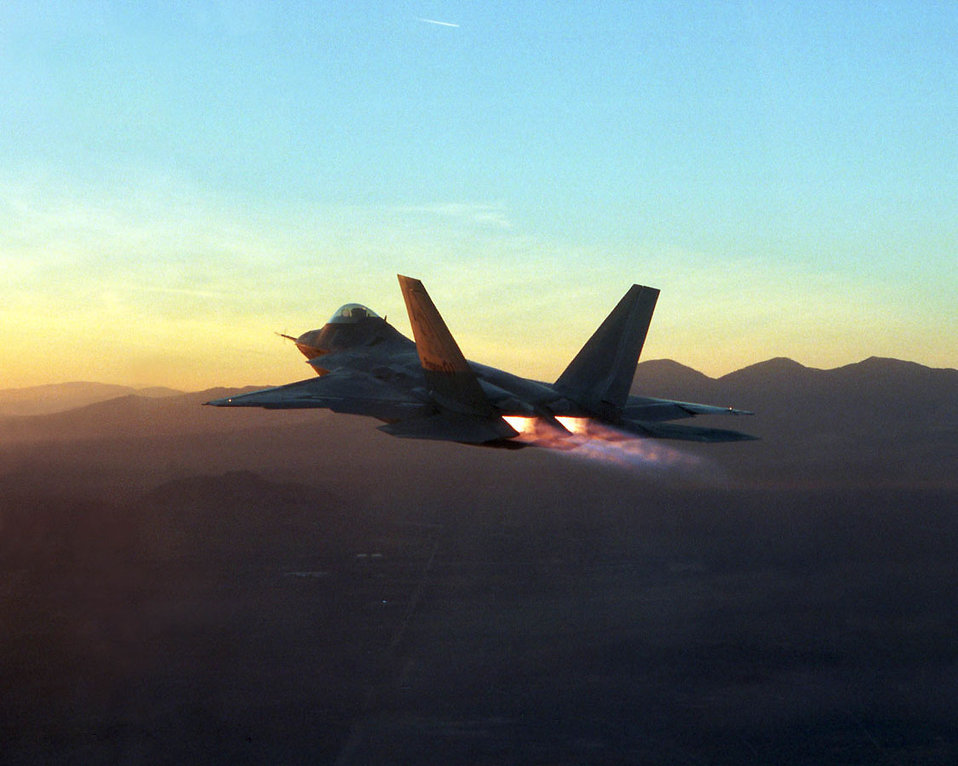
Afterburners

FILE PHOTO -- An F/A-22 Raptor in full afterburner during flight testing at Edwards Air Force Base, Calif. The Raptor is the replacement for the F-15 Eagle. It is the most advanced fighter aircraft in the world, combining a revolutionary leap in technology and capability with reduced support requirements and maintenance costs. The F/A-22's integrated avionics gives it first-look, first-shot, first-kill capability that guarantees U.S. air dominance for decades.